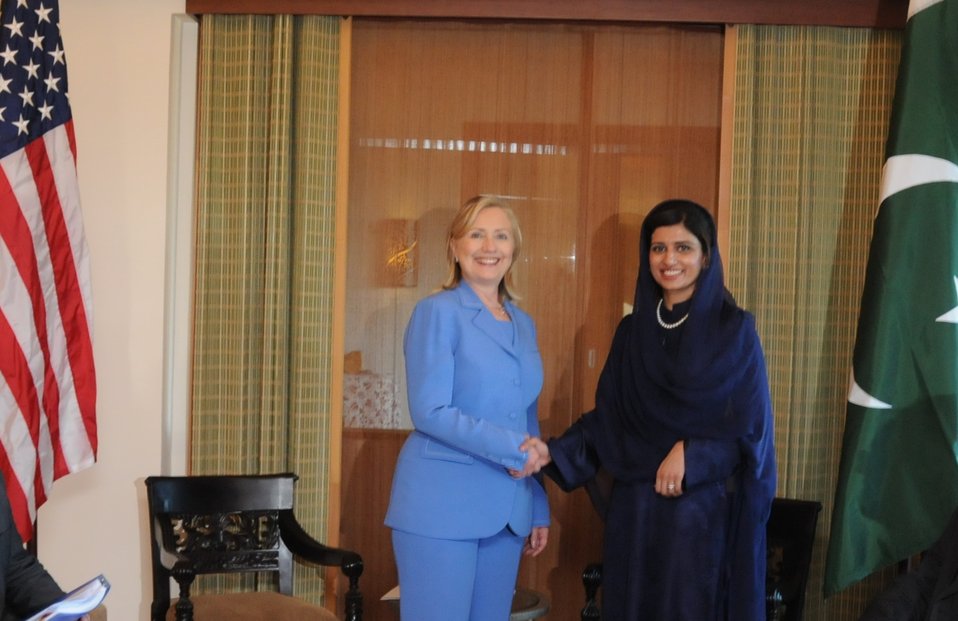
Secretary Clinton Meets With Pakistani Foreign Minister Rabbani Khar

U.S. Secretary of State Hillary Rodham Clinton, left, meets with Pakistani Foreign Minister Hina Rabbani Khar, right, for a bilateral meeting in Bali, Indonesia, on July 23, 2011.